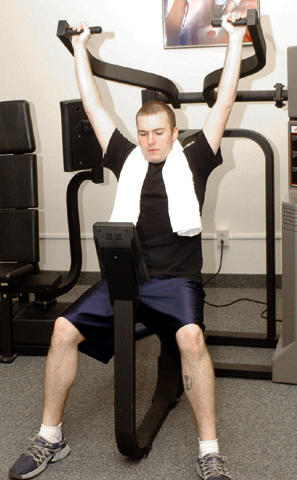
100 lost

MALMSTROM AIR FORCE BASE, Mont. -- Senior Airman Norman Barore has lost 100 pounds in nine months thanks to a fitness routine that includes cardiovascular workouts and strength training.